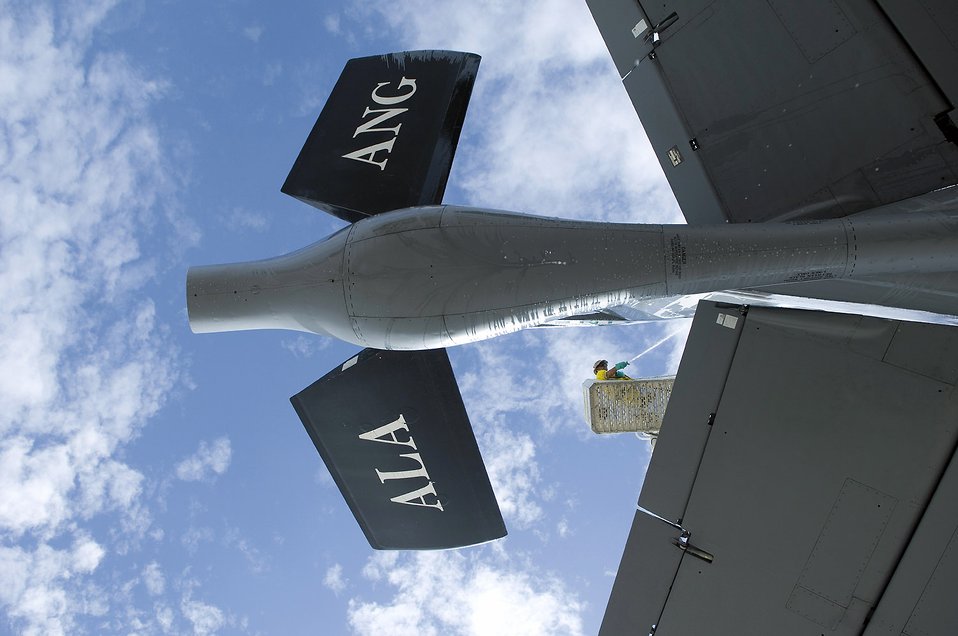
KC-135 Stratotanker

Lawrence Aldrete prepares a KC-135E Stratotanker for storage and preservation at the Aerospace Maintenance and Regeneration Group storage site at Davis-Monthan Air Force Base, Ariz. AMARG's mission has evolved beyond merely the storage and preservation of aircraft. Today the center provides customer services including aircraft regeneration which means restoring aircraft to flying status, limited depot-level maintenance, parts reclamation, historic storage and disposal functions.